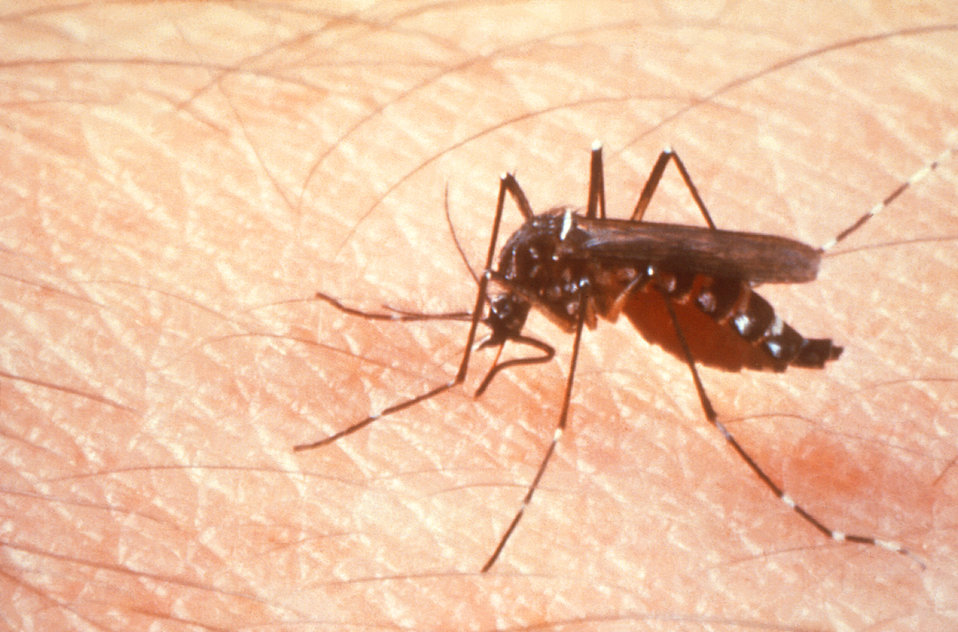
This photograph depicts a female Aedes aegypti mosquito as she rests on the skin of a human host while she acquires a blood meal.